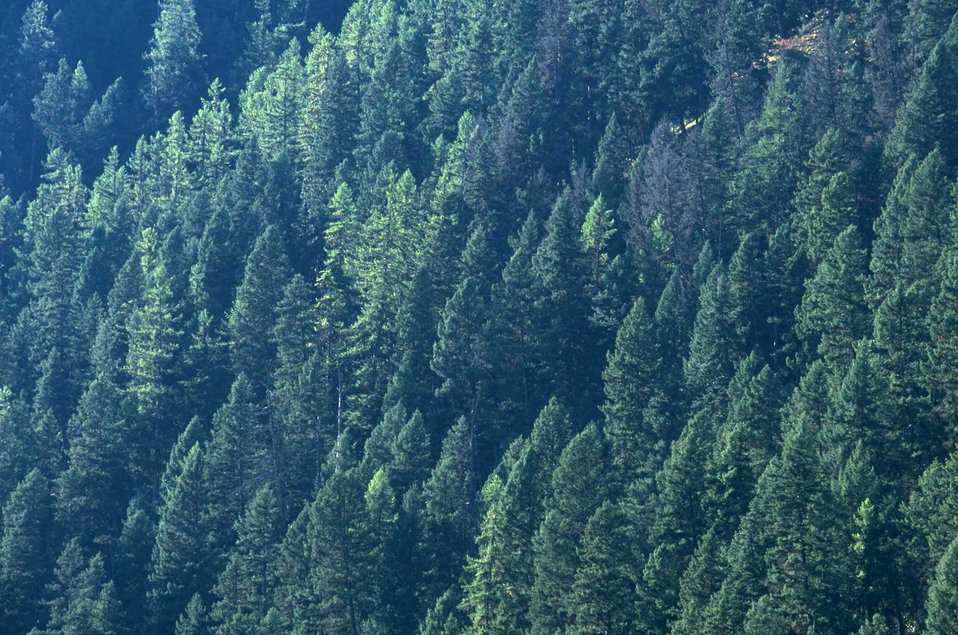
Timber stand along the Blackfoot River